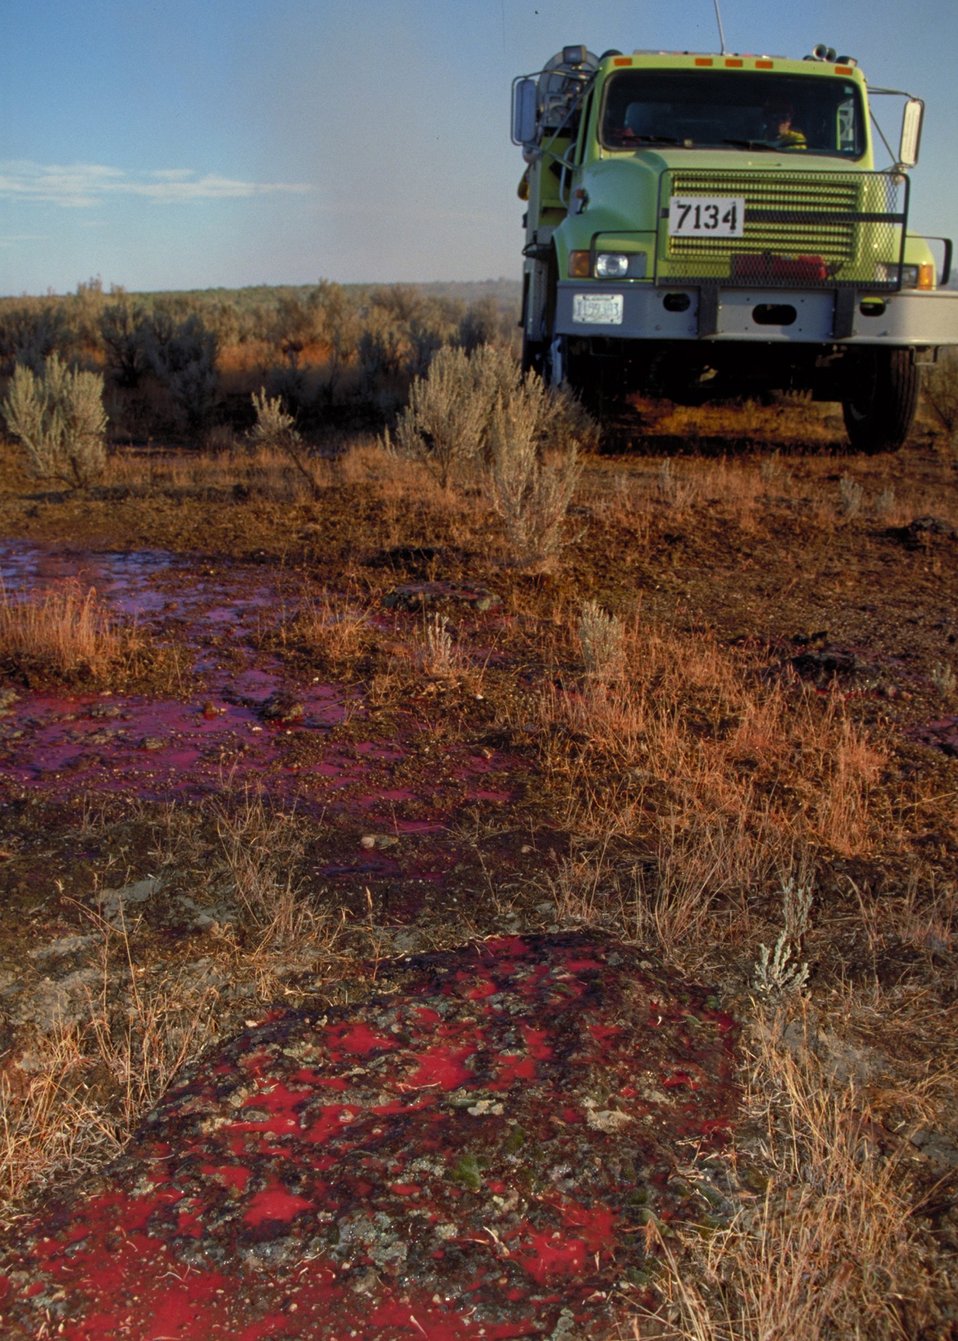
BLM Heavy Engine Retardant on ground Fire Season 2000 Lower Snake River District LSRD